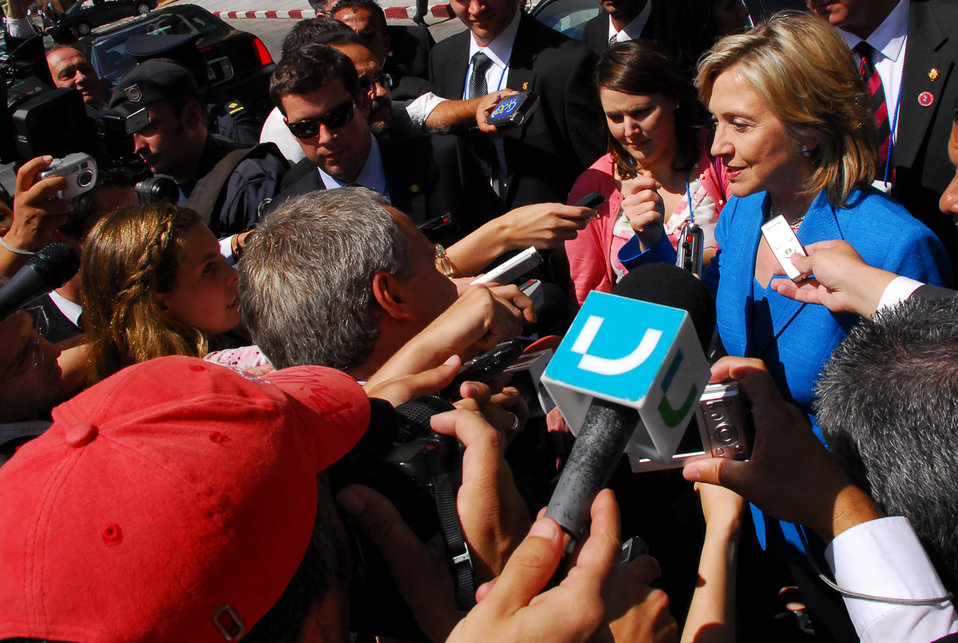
Secretary Clinton Meets With Uruguay President

U.S. Secretary of State Hillary Rodham Clinton speaks to Uruguayan press after a meeting with President Tabaré Vázquez in Montevideo, Uruguay March 1, 2010.